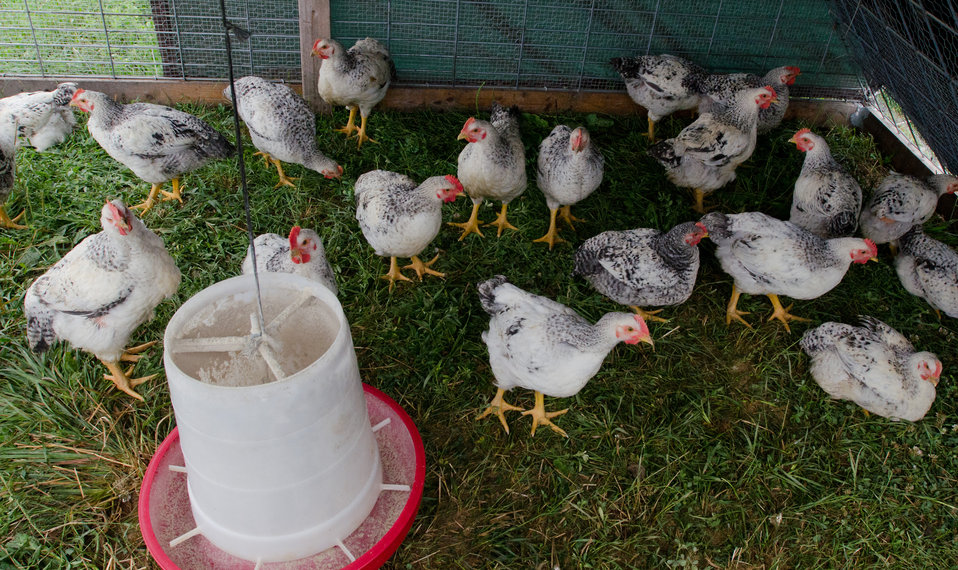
Broiler chickens graze on organic pastures and live in pens that protect them from predators, direct sun light, and wind at Nick’s Organic Farm, owned by Nick Maravell in Adamstown, MD on Friday, July 12, 2013. The enclosures are light enough to be moved by hand, each day, one consecutive section at a time. This allows the pasture to easily recover from the grazing. The farm produces Black Angus beef, chicken, turkey, eggs, hay, soybeans, corn, alfalfa, orchard grass, rye; and other crops. The cattle are100% grass-fed receiving certified organic pasture, certified organic hay (in winter), water and mineral salts mixed with sea kelp. The cattle are not fed hormones, antibiotics or animal products. Poultry feed from grain is ground from organic grain. The poultry also graze on organic pastures. The farm has conducted on-farm research with federal, state and non-profit agencies to refine organic practices. An organization such as the U.S. Department of Agriculture (USDA) Agricultural Research Service (ARS) center in Beltsville has been able to conduct research to improve organic crops and to breed and manage the cattle so that they have.